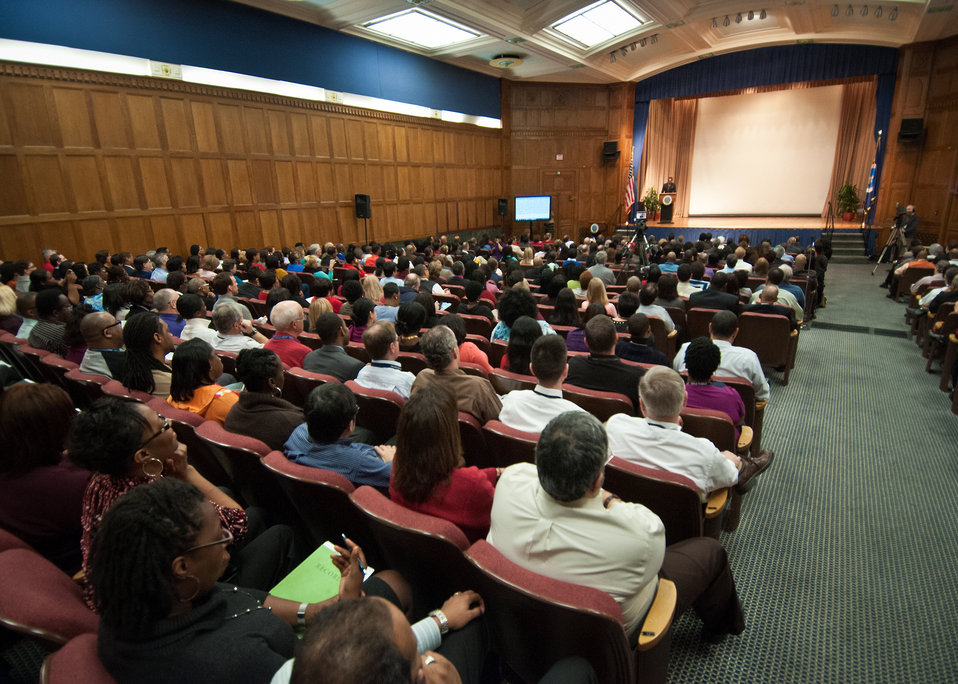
United States Department of Agriculture employees and guests listen to Tim Reid Actor, Comedian, Filmmaker and Social Activist at the United States Department of Agriculture Black History Month celebration “Black Women in American Culture and History” in Washington, D.C. on Thursday, February 16, 2012.